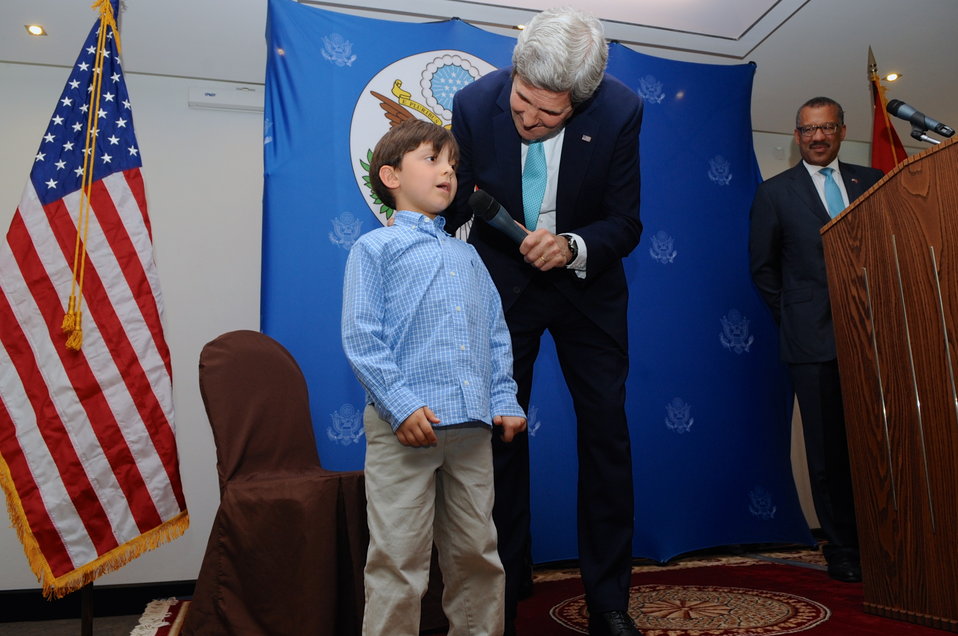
Secretary Kerry Asks Child of Embassy Rabat Staffer To Demonstrate Language Skills

U.S. Secretary of State John Kerry asks the son of an Embassy Rabat staffer to demonstrate his language skills (he is learning French) during a meet-and-greet with staff and family members from the Embassy on April 3, 2014, in Rabat, Morocco before a Strategic Dialogue between the United States and Morocco.